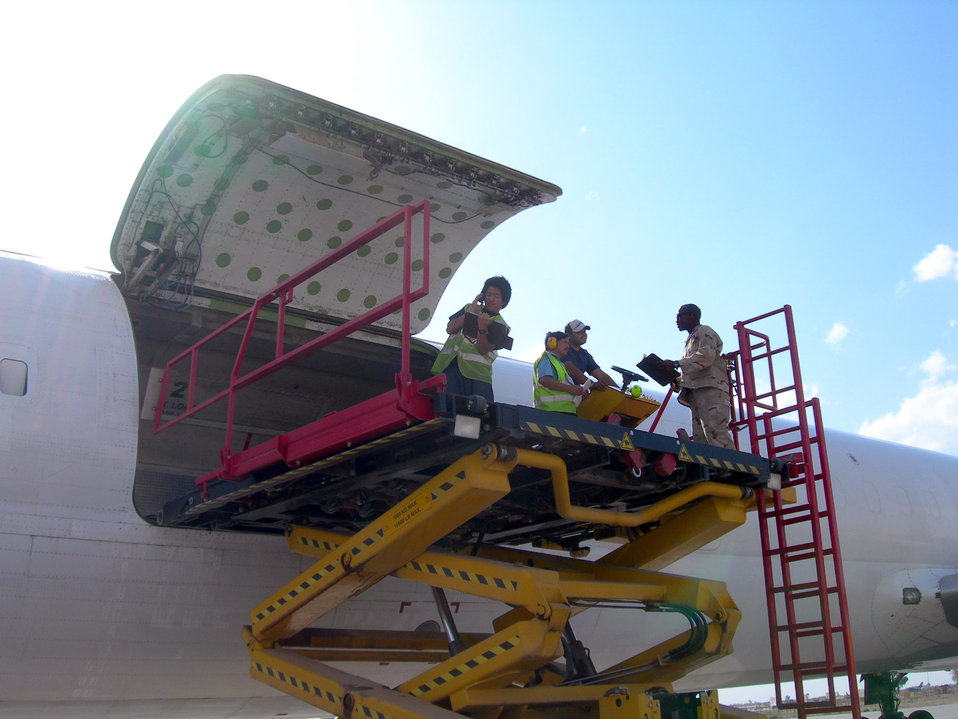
Airmen provide 1st class postal service to thousands

Senior Airman Brandon Reynolds and contractors load outgoing mail onto a cargo aircraft at Balad Air Base, Iraq. The Joint Military Mail Terminal sends out approximately 85,000 pounds of outgoing mail each week. Every day two aircraft deliver and pick up an average of 18 pallets of mail to and from the base. Airman Reynolds is assigned to the 332nd Expeditionary Communications Squadron.